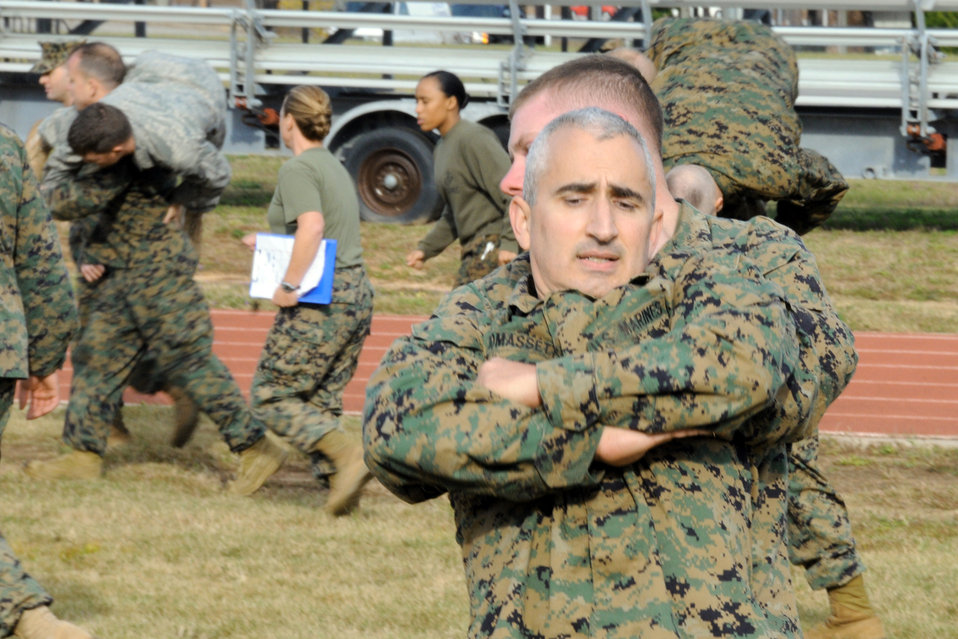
Eglin Airmen join Marines in combat fitness test

Marines from the 33rd Fighter Wing and Airmen from across Eglin Air Force Base take part in the Marines' combat fitness test Nov. 25, at Eglin AFB, Fla. Airmen were invited to participate by the Marines, who were testing as part of their annual fitness program.